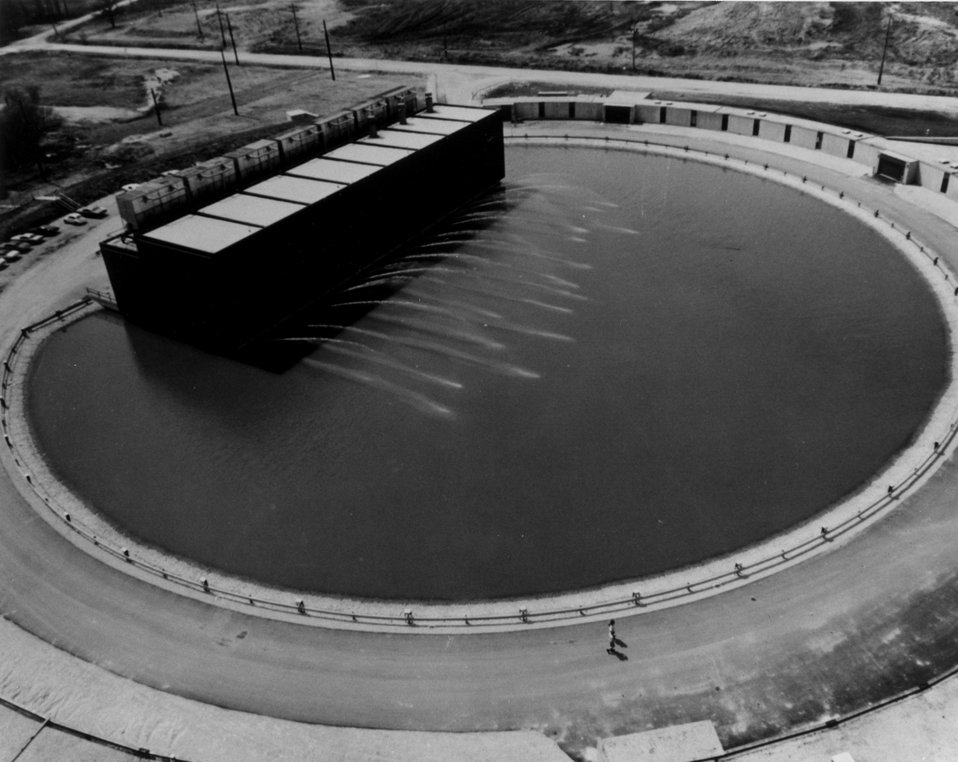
Aerial view of cooling pond atop Booster Accelerator at the Atomic Energy Commission's National Accelerator Laboratory. c. 1971